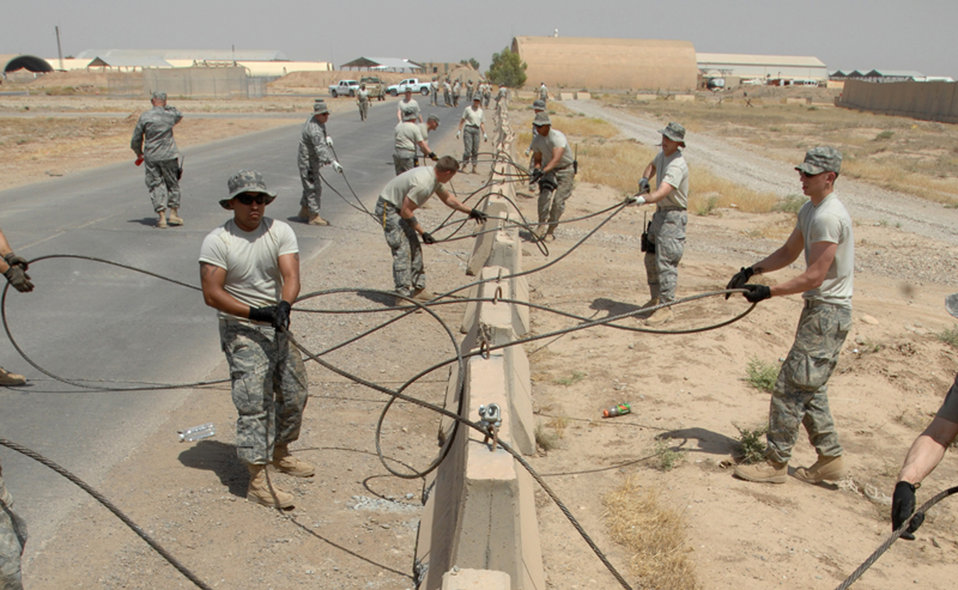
Kirkuk self-help project protects airfield assets, saves money

Airmen from the 506th Air Expeditionary Group thread aircraft cable through jersey barriers to create a barricade around the flight line to mitigate vulnerabilities and lessen safety risks June 5 at Kirkuk Air Base, Iraq. This self-help security project saved an estimated $500,000 by using existing assets and volunteers.